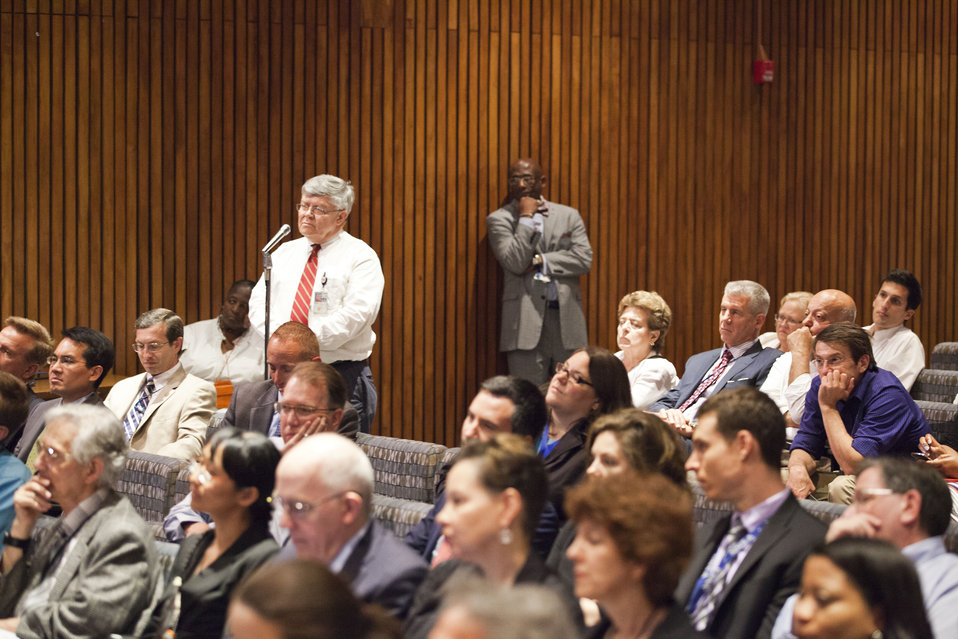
DOE Town Hall

On May 22, 2013, newly sworn-in Energy Secretary Dr. Ernest Moniz opened up a town hall forum. DOE employees were invited to attend, and submit questions to staff.